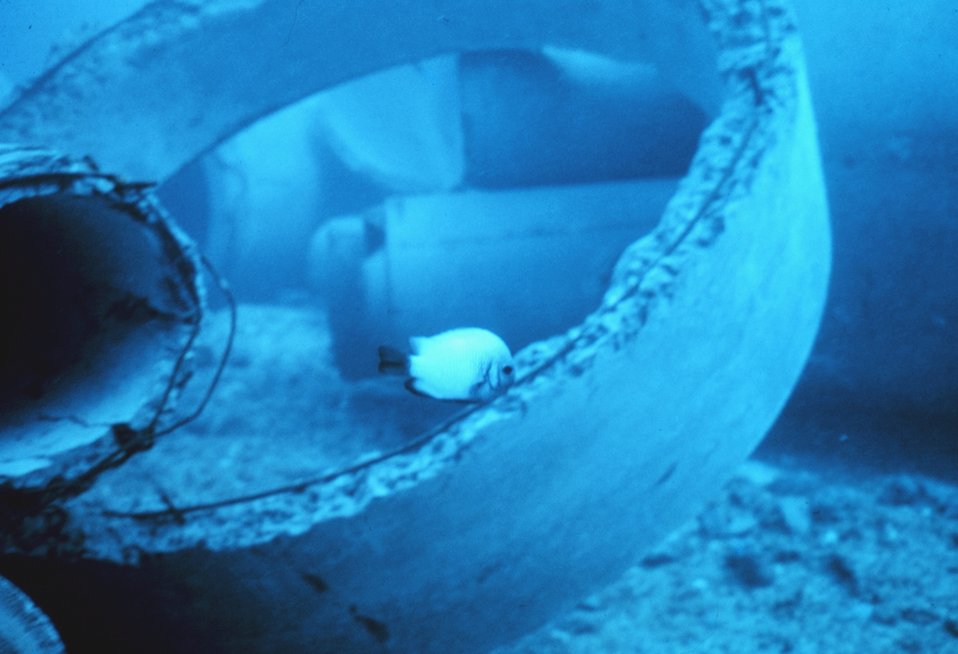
Dascyllus albisella -damselfish exploring new reef material.